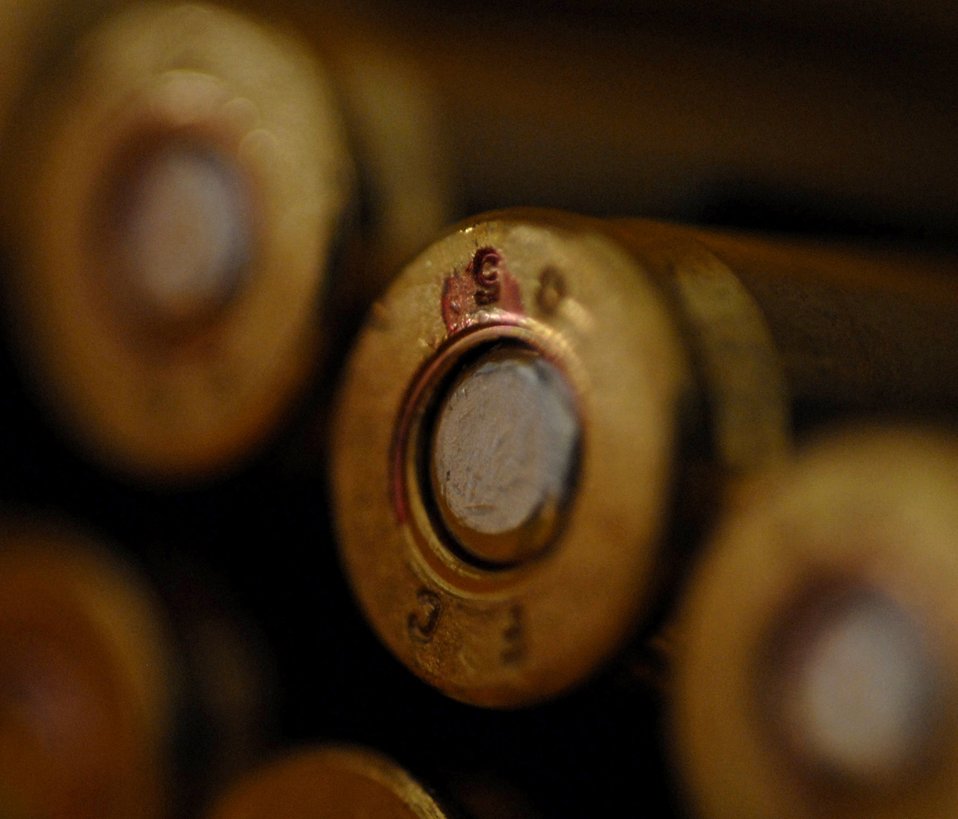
The line is ready, FIRE!

Unused 5.56mm rounds wait to be loaded into an M-16 during a tactical rifle qualification course April 12 at Luke Air Force Base, Ariz. Airmen must be qualified in their primary weapon prior to deploying in support of the war on terrorism. There are more than 28,000 Airmen deployed around the world today. .